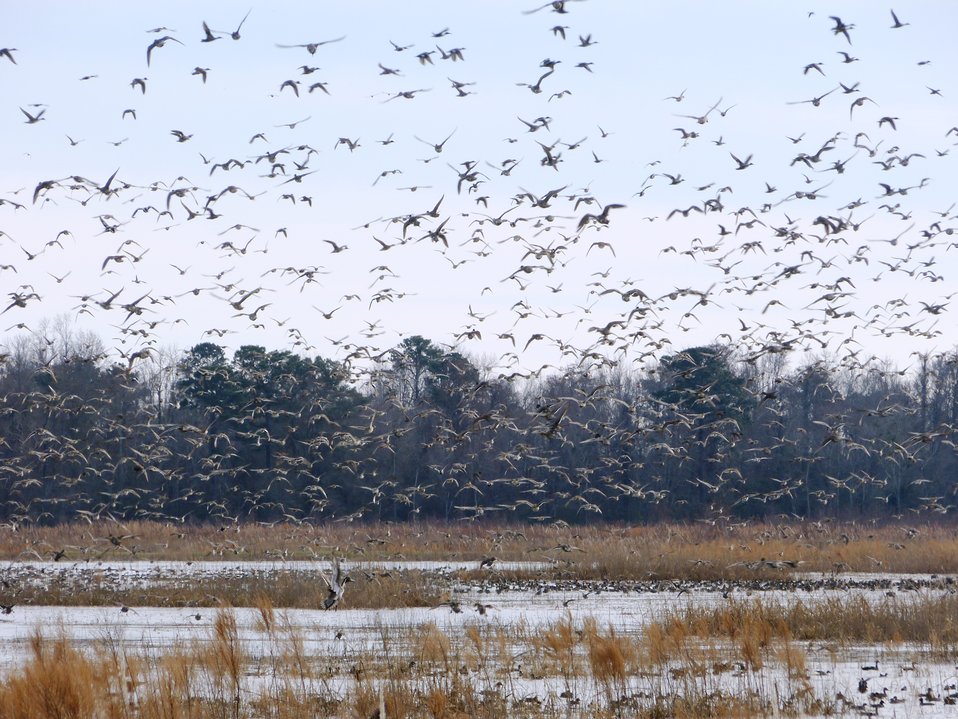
Pintails and more

At Mattamuskeet National Wildlife Refuge in North Carolina. The Refuge’s prime location along the Atlantic Flyway makes it a vitally important stopover for wintering waterfowl.